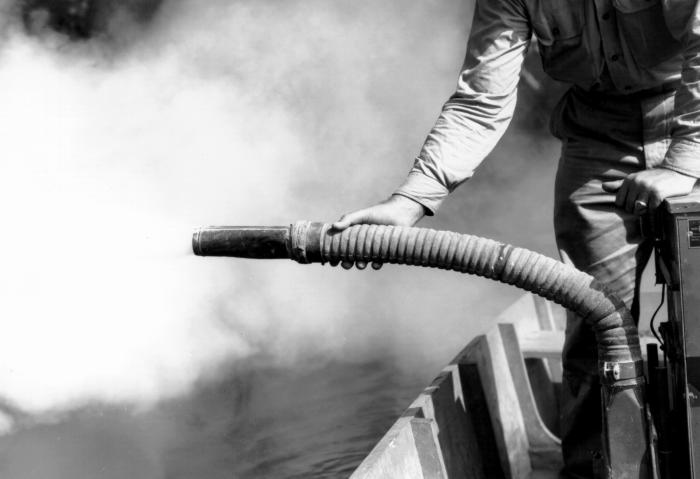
This individual is controlling the mosquito population in areas of standing water using a heavy dusting of mosquito repellent.